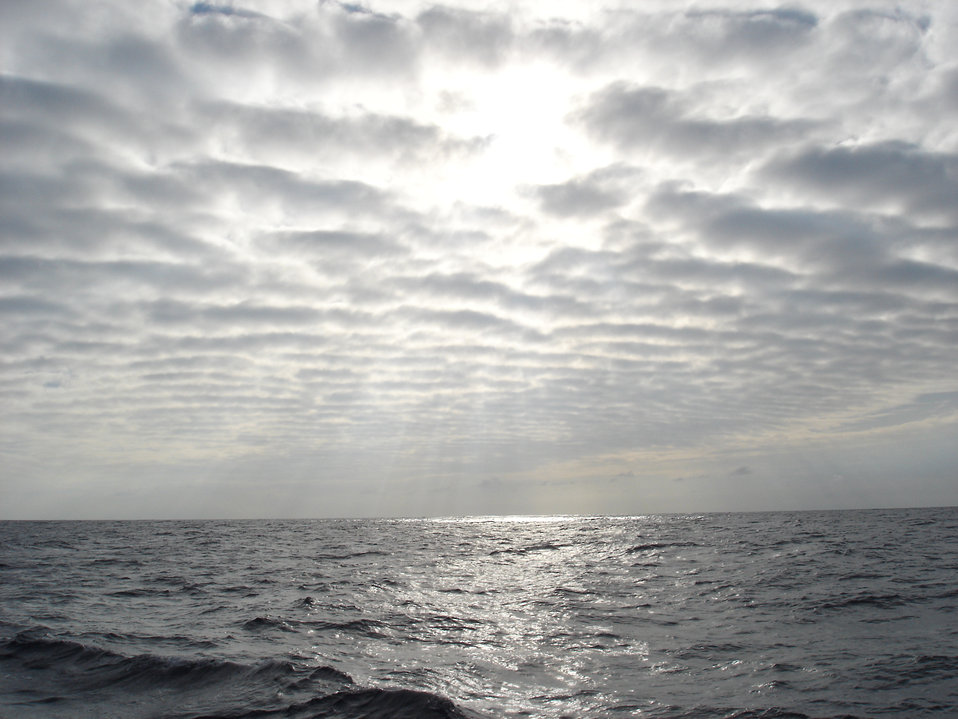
Sun, light, clouds, and ocean